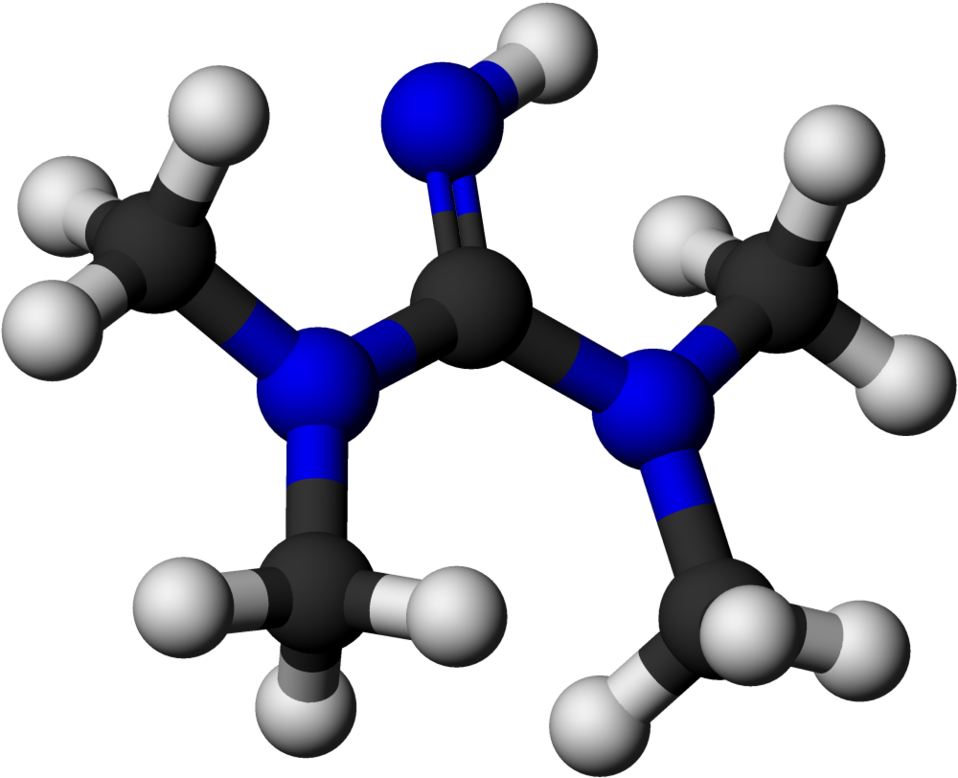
1,1,3,3-Tetramethylguanidine